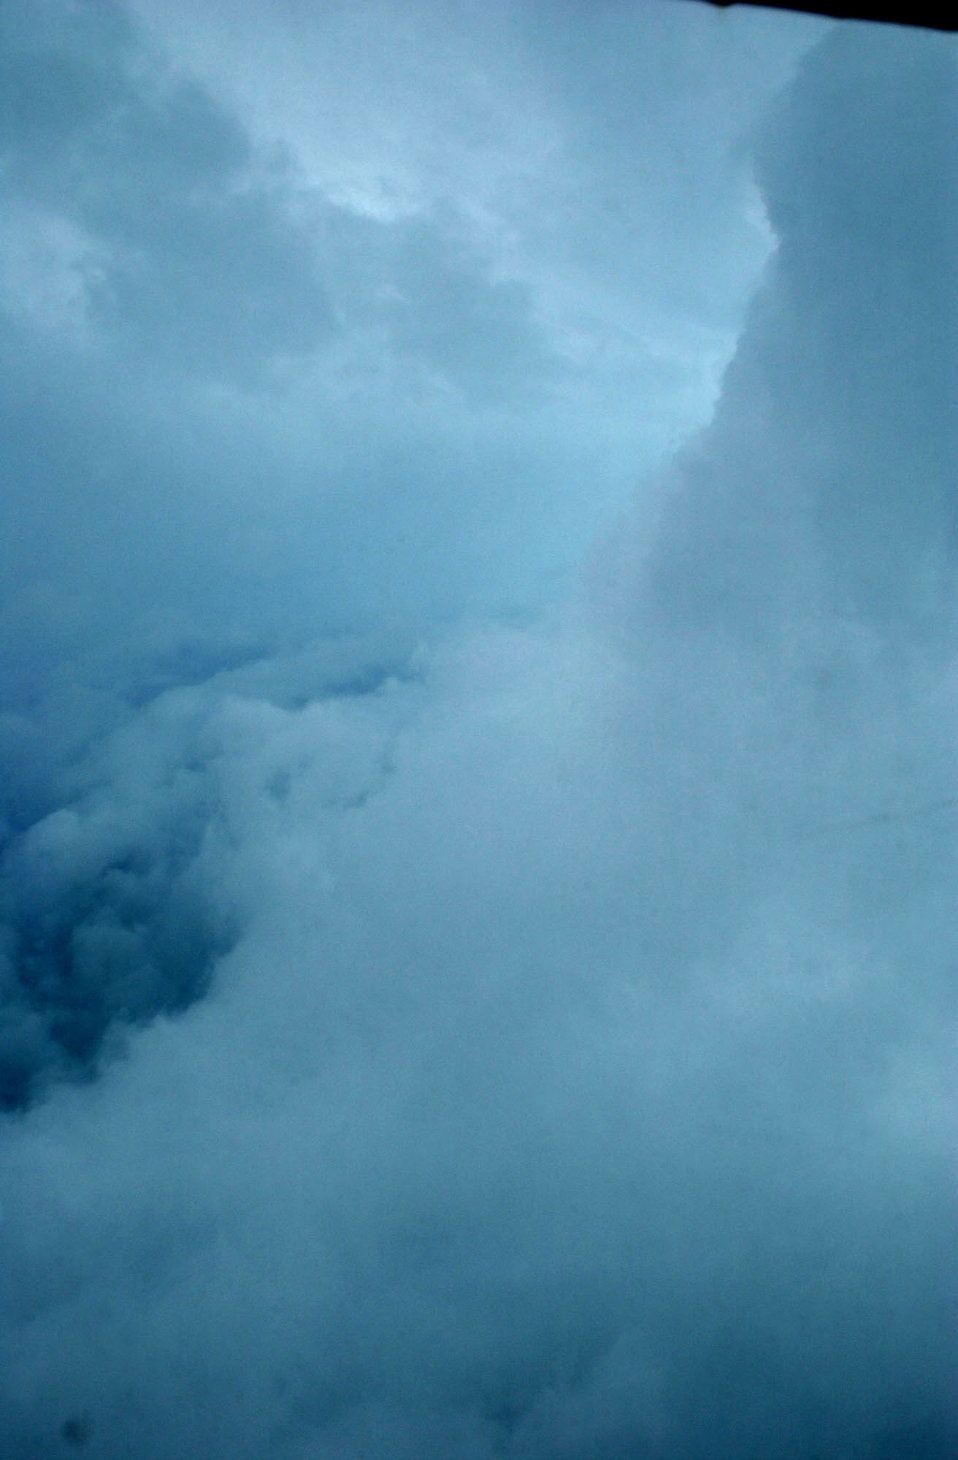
Hurricane Charley

OVER FLORIDA -- As Hurricane Charley approached the Florida coast, wind speeds increased to a top speed of 148 knots (170 mph) while the diameter of the storm's eye decreased to an intense 5 miles. This view of the outer wall of the eye was taken from a C-130H aircraft Aug. 13 at 2:55 p.m.